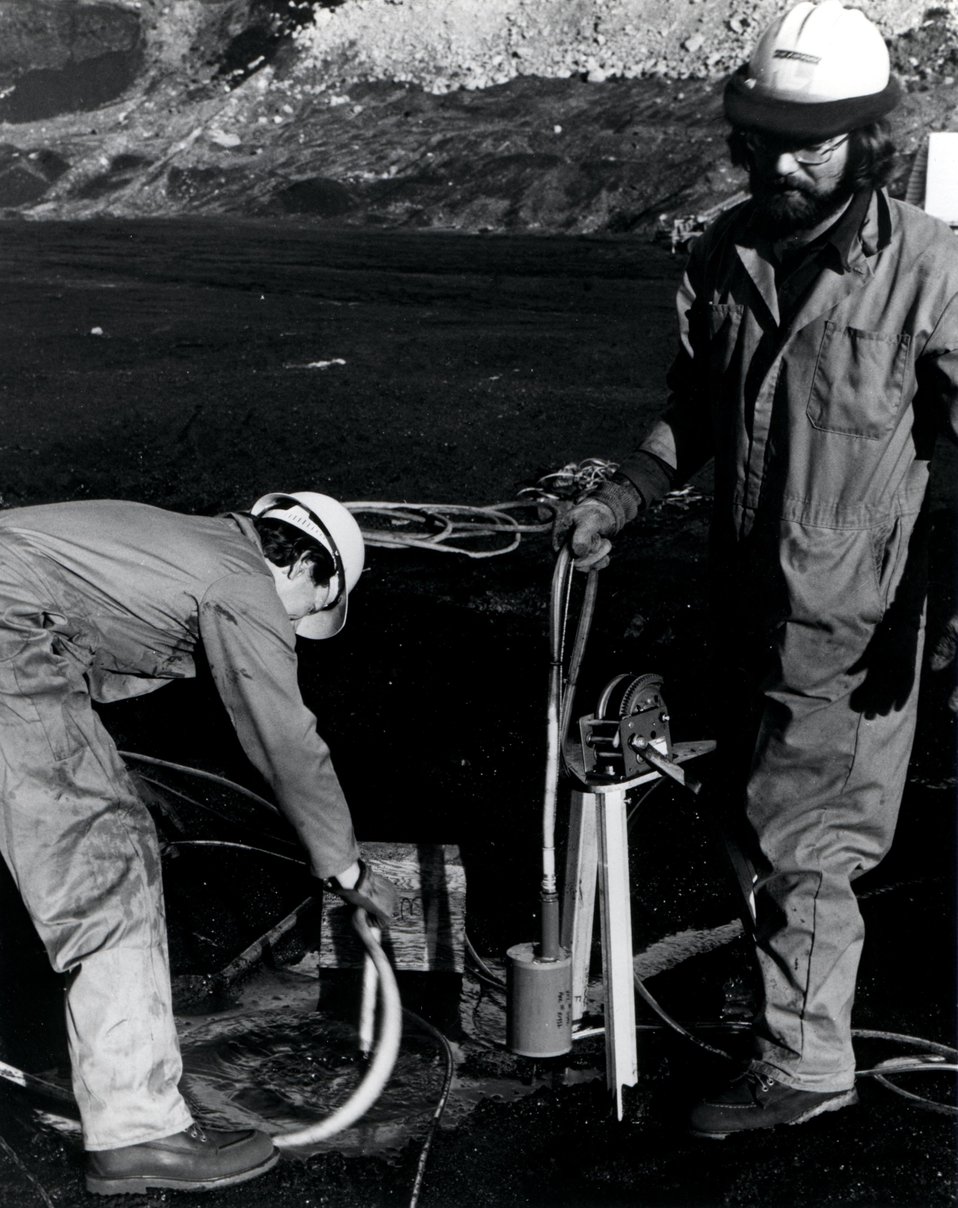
A field crew sets accelerometers in a hole drilled into a coal deposit for an experiment in the fracturing of coal with high explosives. The experiment was conducted at the Kemmerer Coal Company mine in Kemmerer, Wyoming. Circa 1975.